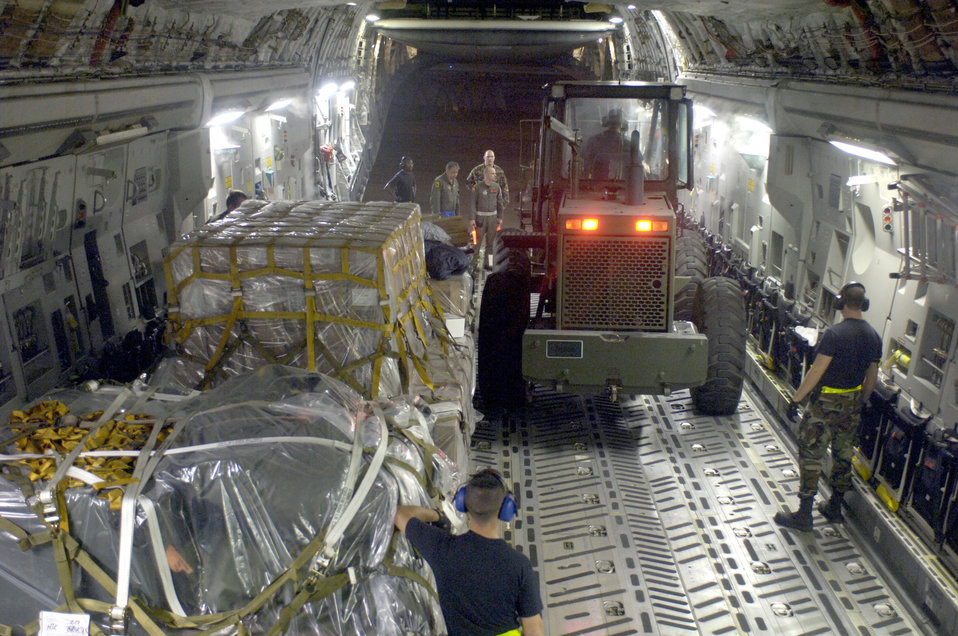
Contingency response

ANDERSEN AIR FORCE BASE, Guam (AFPN) -- Members from the 734th Air Mobility Squadron load a forklift on a C-17 Globemaster III Feb. 22. The 535th Airlift Squadron and the 204th Airlift Squadron is conducting its first contingency response mission to support relief efforts in the Philippines.